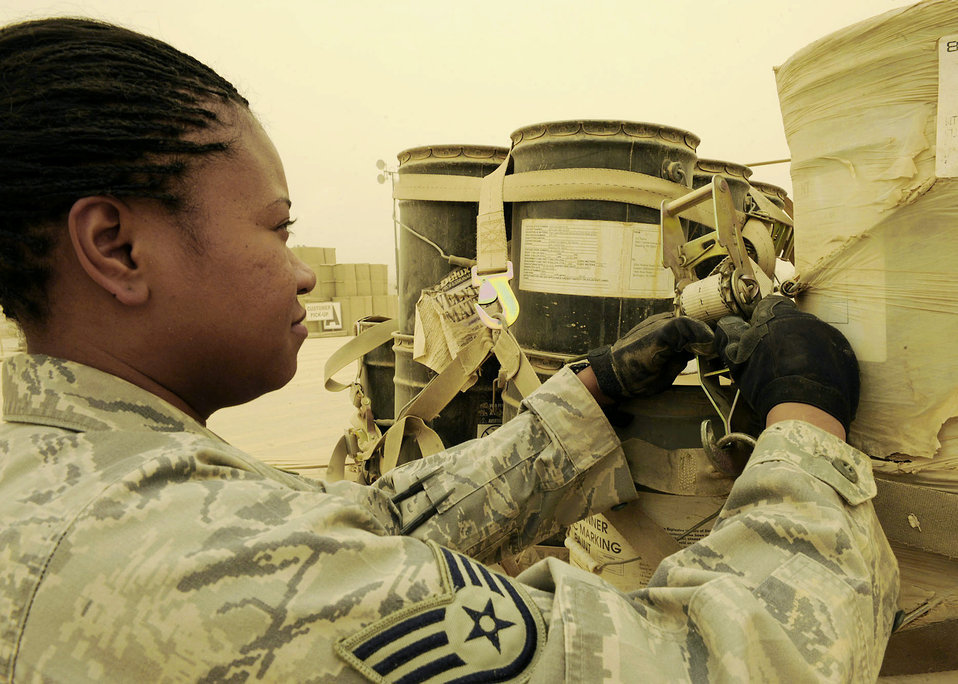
Airmen take reins on Army cargo movement mission

Staff Sgt. Starlette McMillan, 22nd Movement Control Team, tightens down the cargo netting on a pallet June 18 at Sather Air Base, Iraq. Sergeant McMillan is part of a 16-person 22nd Movement Control Team taking over the mission from the Army?s 258th MCT. The team has only been in country a week and on their second day moved more than 150 pallets. Sergeant McMillan is deployed from Fairchild Air Force Base, Wash., and a native of Silverdale, Wash.